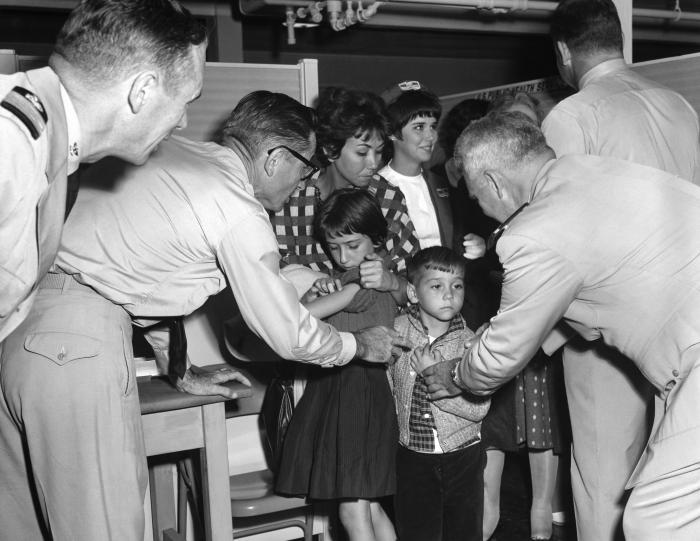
This 1965 photograph shows several U.S. Public Health Service representatives as they were assisting in the immunization of a Cuban family upon their arrival to the United States.